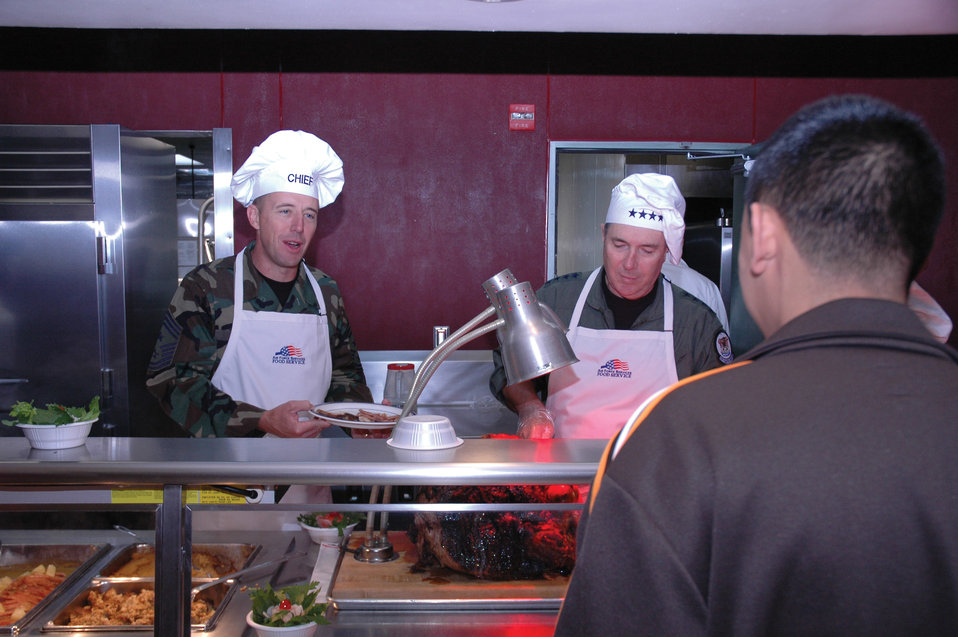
PACAF commander serves Thanksgiving meals

Gen. Paul V. Hester (right), Pacific Air Forces commander, and Chief Master Sgt. Anthony Bishop, PACAF command chief master sergeant, serve Thanksgiving meals to Airmen at Osan Air Base, South Korea, Nov. 23.